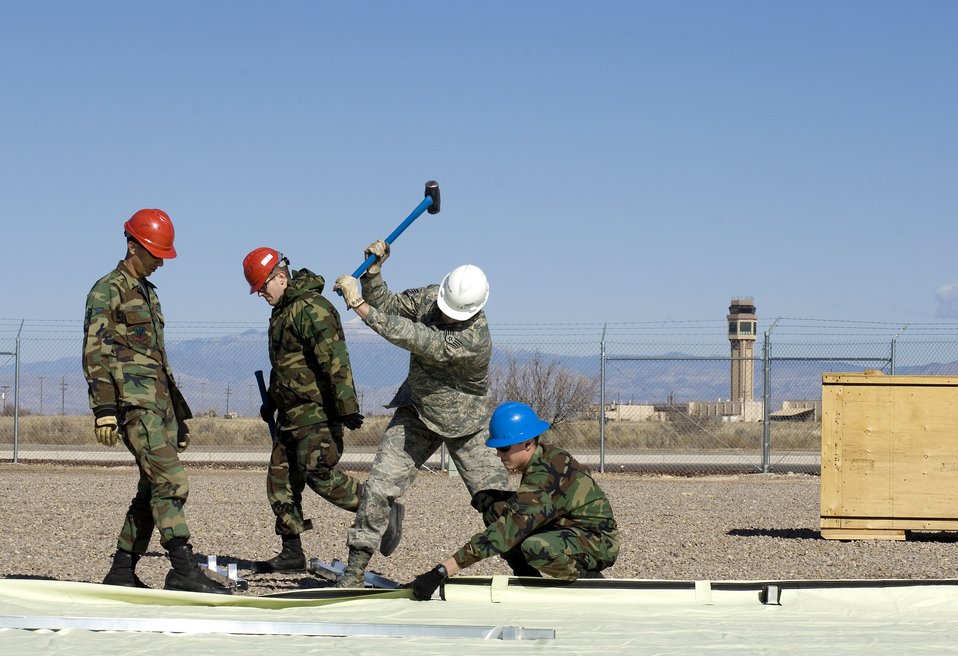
Providing shelter is a BEAR

Airmen from the 49th Material Maintenance Group work to build a small shelter system during a Jan. 16 exercise at Holloman Air Force Base, N.M. Members of the 49th MMG can build a Basic Expeditionary Airfield Resource, or BEAR, in austere conditions anywhere in the world. Airmen of the 49th MMG maintain a constant state of readiness and can be tasked to support any Department of Defense or Federal Emergency Management Agency humanitarian operations along with primary duties of supporting combat operations.